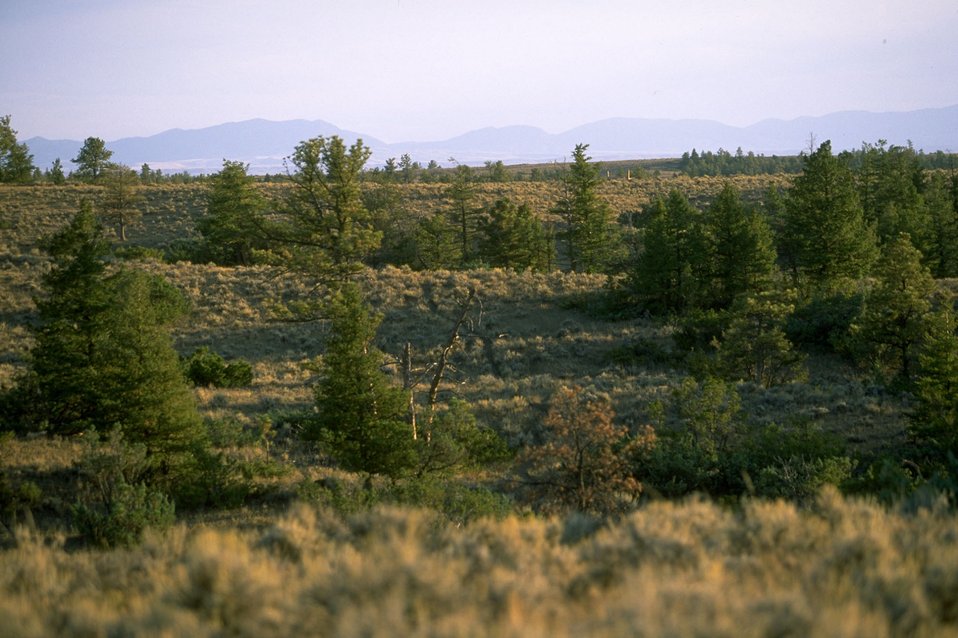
Missouri Breaks scenery